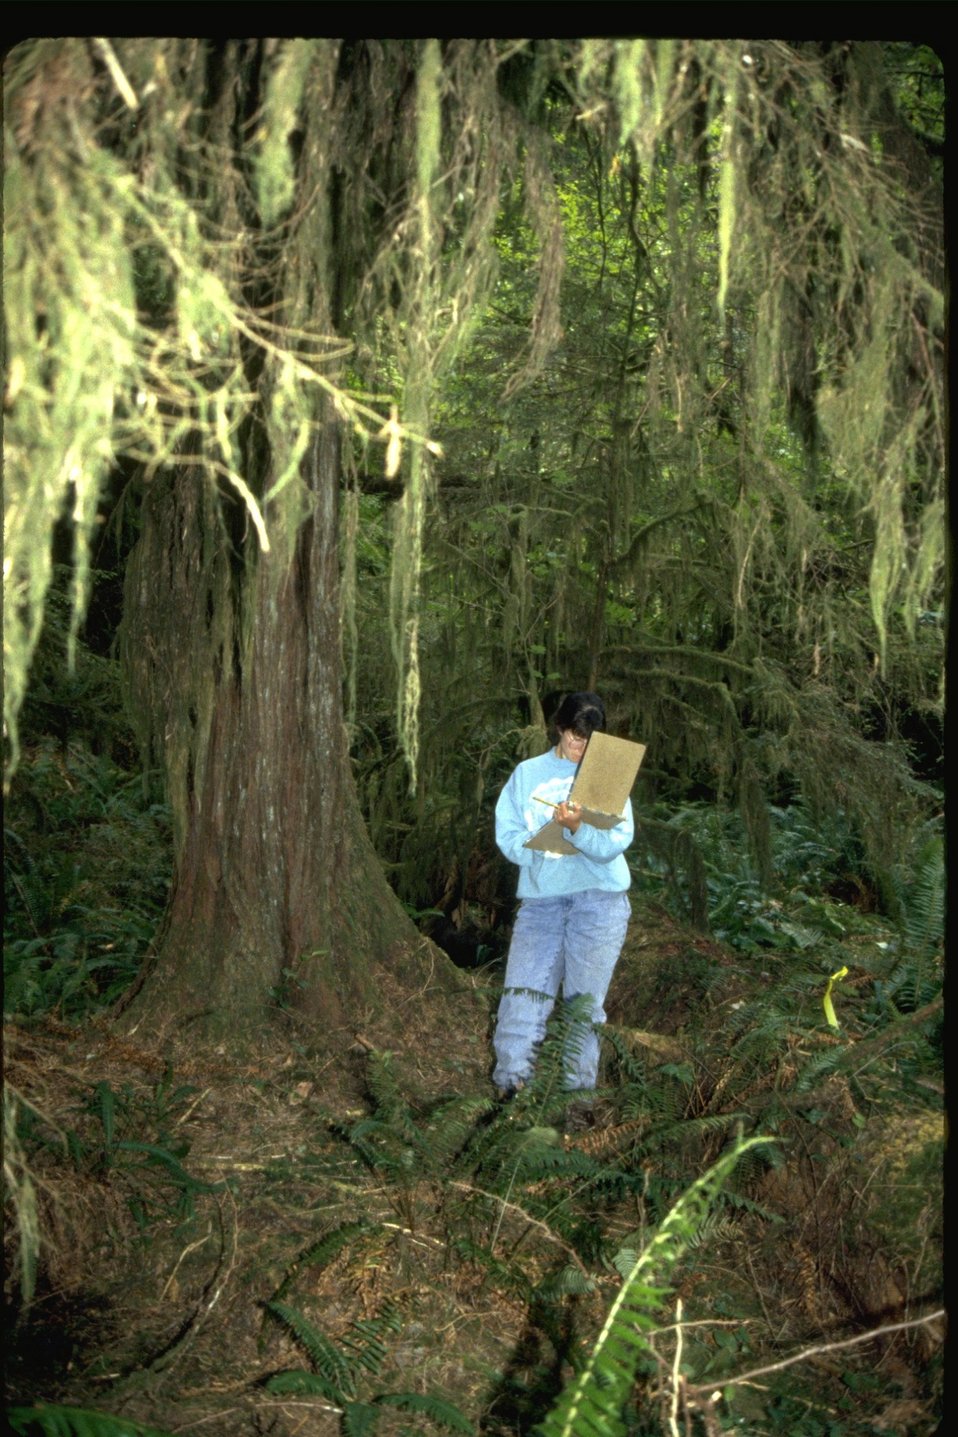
Wendy is conducting forest surveys.